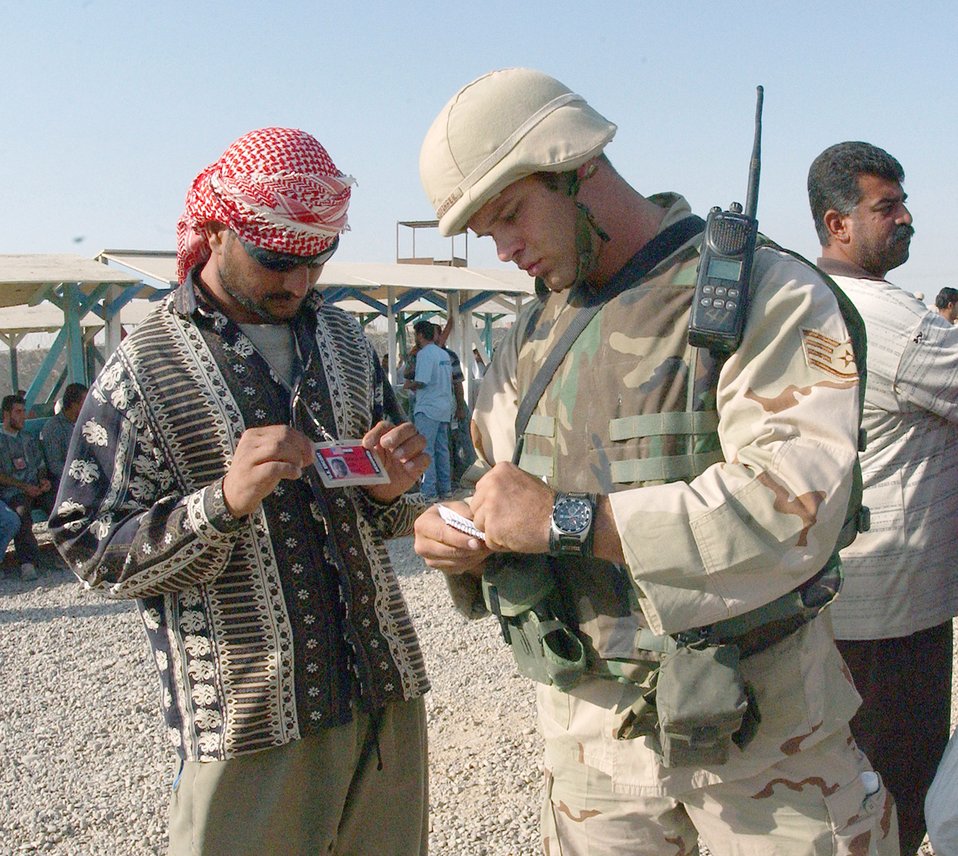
Escorts keep watch over foreign workers

BALAD AIR BASE, Iraq -- Staff Sgt. Guenther Bogensperger checks a worker's paperwork Oct. 4. He is a security escort with the 332nd Expeditionary Civil Engineer Squadron here and is deployed from Keesler Air Force Base, Miss.